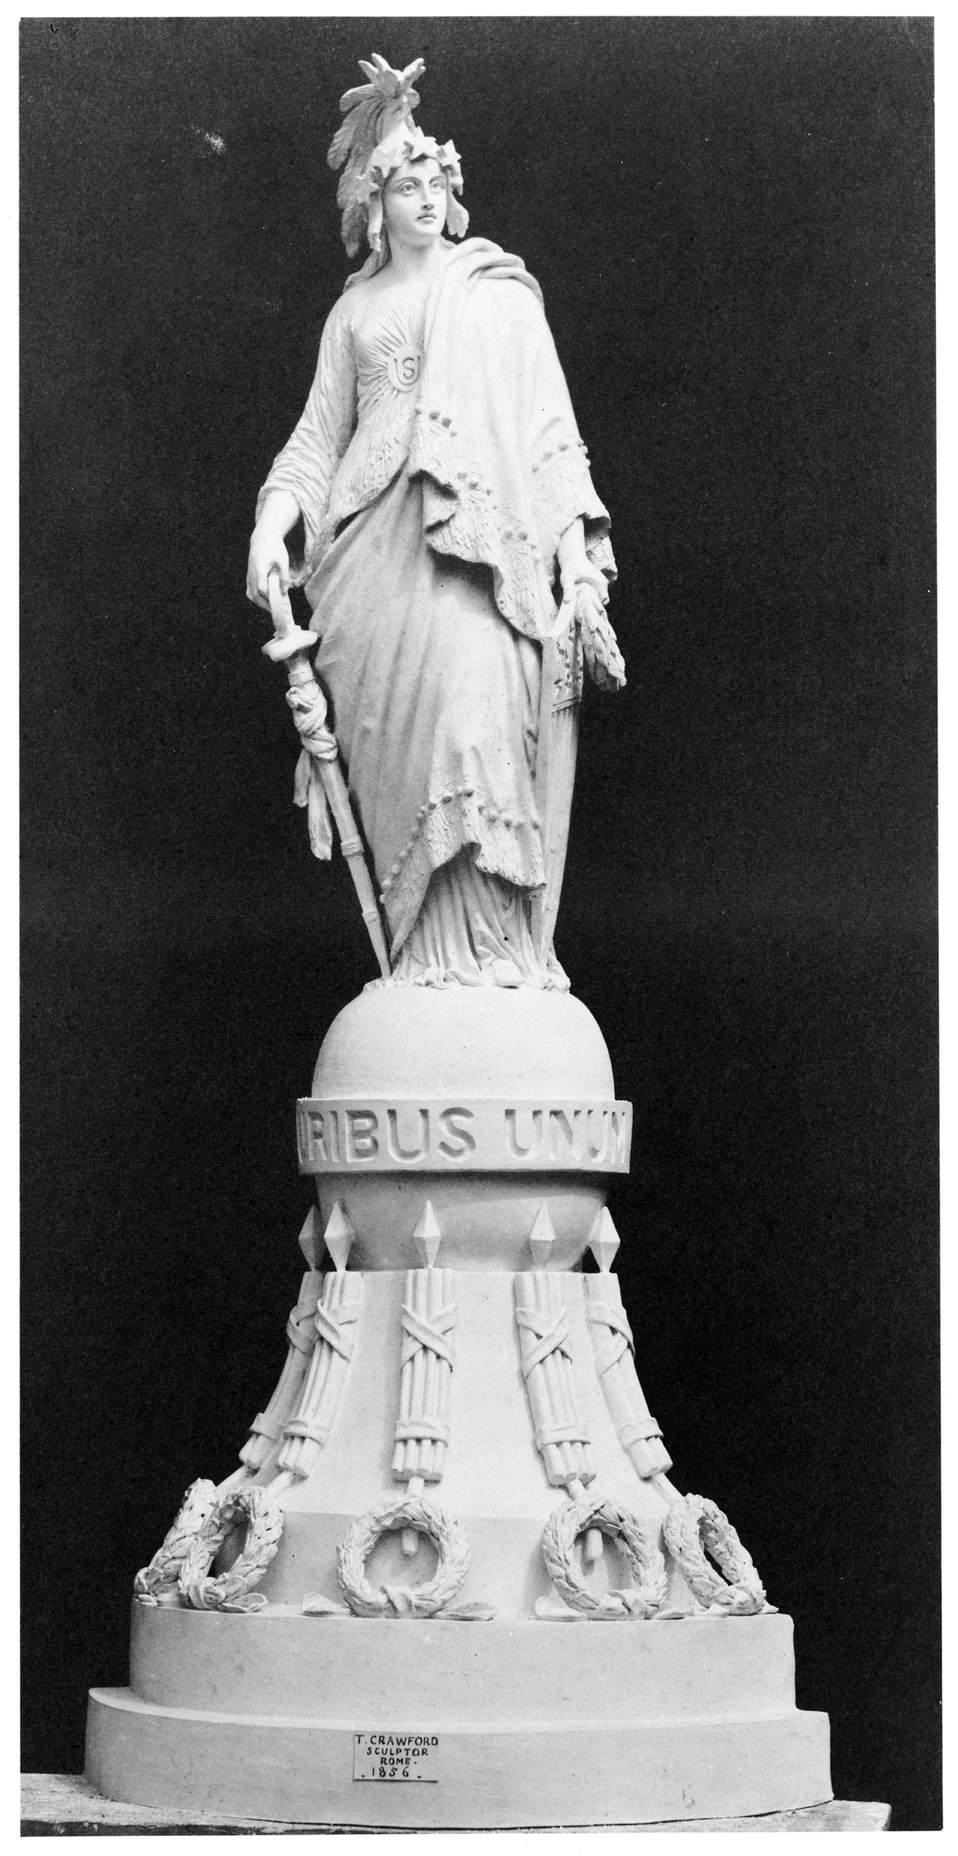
Third Design of Statue of Freedom

Sculptor Thomas Crawford's third design for the Statue of Freedom was approved by Secretary of War Jefferson Davis in April 1856.

This design features a classical female figure with long, flowing hair wearing a helmet with a crest composed of an eagle’s head and feathers. The helmet is encircled by nine stars. She wears a classical dress secured with a brooch in¬scribed “U.S.” Over it is draped a heavy, flowing, toga-like robe fringed with fur and decorative balls. Her right hand rests upon the hilt of a sheathed sword wrapped in a scarf; in her left hand she holds a laurel wreath of victory and the shield of the United States with 13 stripes. Ten bronze points tipped with platinum are attached to her headdress, shoulders, and shield for protection from lightning. She stands on a cast-iron pedestal on a globe encircled with the motto E Pluribus Unum (Out of many, one).

Learn more about the design of the Statue of Freedom.